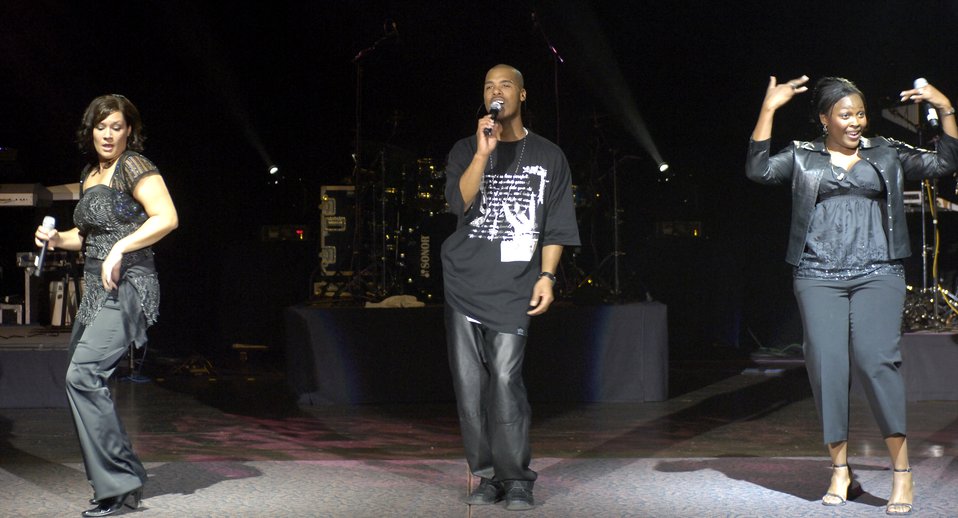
Sergeant takes Anti-drug battle personally

Staff Sgt. Frances Hudlow (left to right), Tech. Sgt. Aaron L. Miles and Staff Sgt. Keisha Gwin-Goodin, vocalists with Reserve Generation, sing to third through seventh grade students attending an anti-drug concert Oct. 25 at Trinity University in San Antonio. The concert was part of National Red Ribbon Week, an anti-drug campaign focused on educating individuals, families and communities on the destructive effects of drugs and the positive alternative life choices that are available to youth. The 2006 Red Ribbon Week runs from Oct. 23 to 29. Reserve Generation is part of the Air Force Reserve Command Band at Robins Air Force Base, Ga.